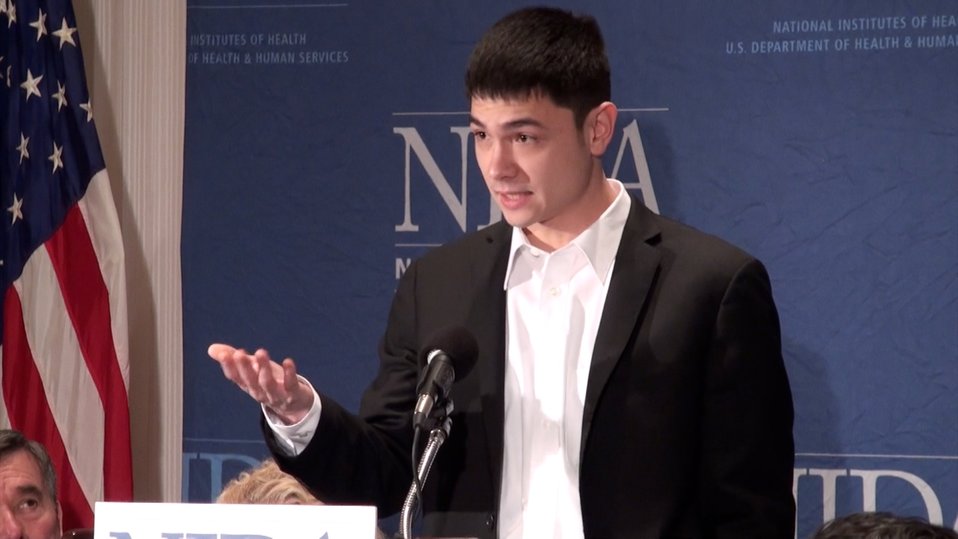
Chris Leibowitz